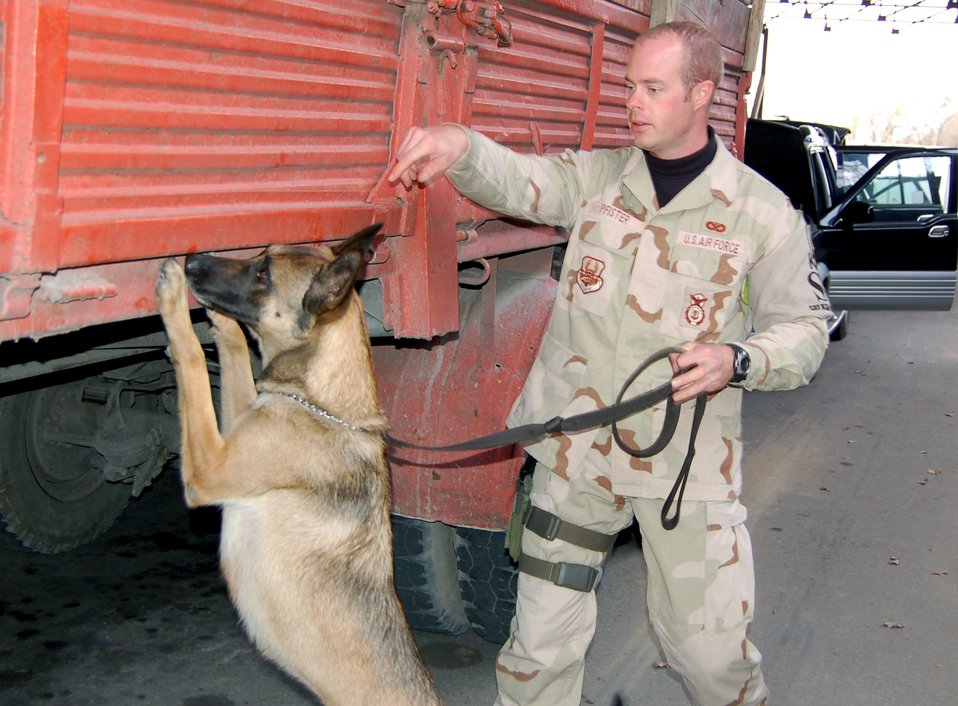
Safe and secure

Staff Sgt. Scott Pfister and Ffella, his 4-year-old female Belgian Malinois, search a truck at Manas Air Base, Kyrgyzstan. Sergeant Pfister, a military working dog handler with the 376th Expeditionary Security Forces Squadron, and Ffella have worked together more than two years. They are deployed from the 9th SFS at Beale Air Force Base, Calif. Ffella gets her unique name from the Air Force's dog breeding program at Lackland AFB, Texas. All dogs bred through the program are identified with a double first letter in their name.